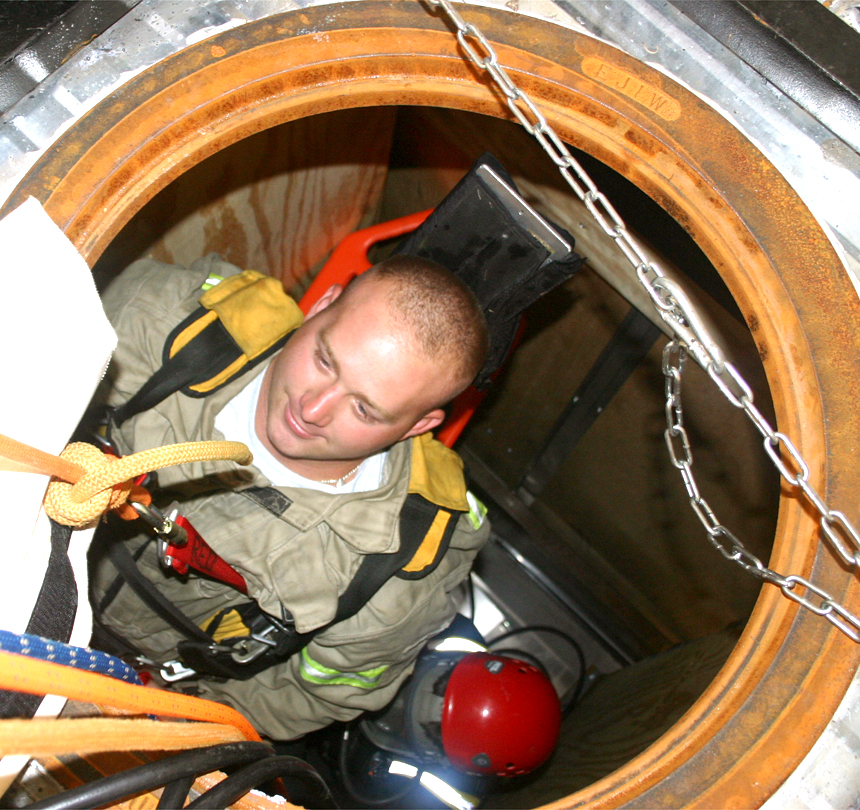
Think inside the tunnel

LAUGHLIN AIR FORCE BASE, Texas -- Senior Airman Jason Burd hoists a